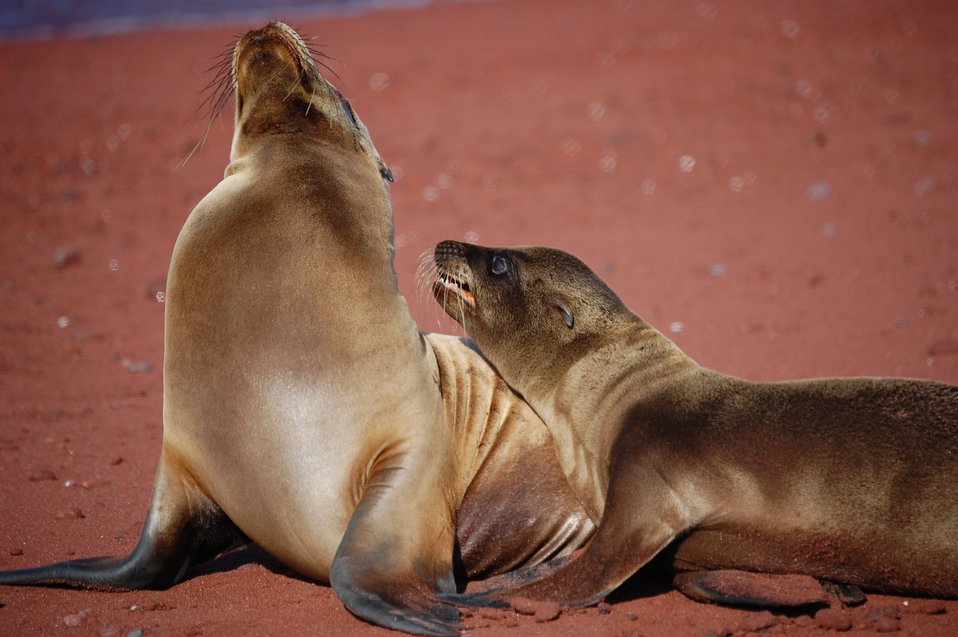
Mother sea lion and pup love - a remarkable display of affection. Photo #8 of sequence.